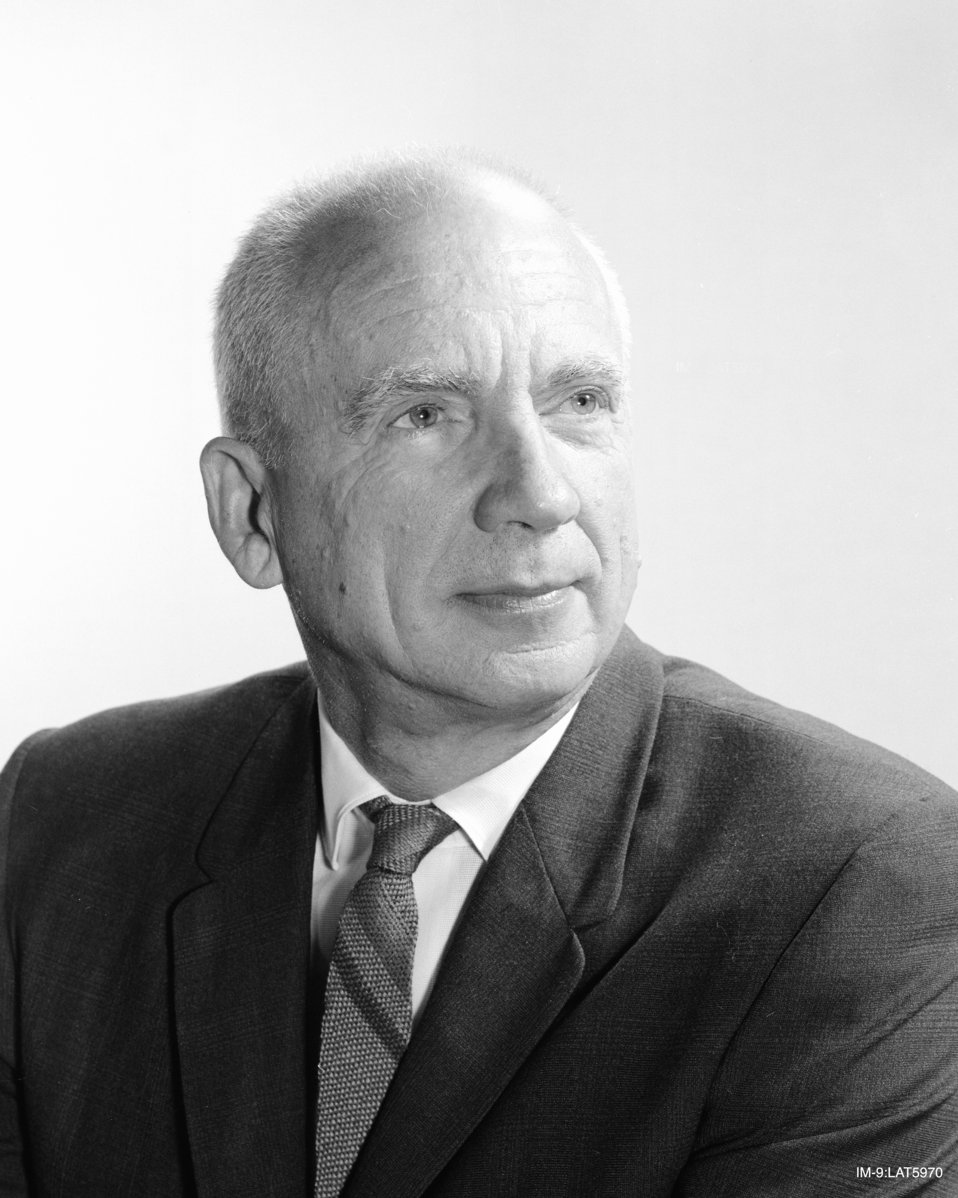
NORRIS BRADBURY